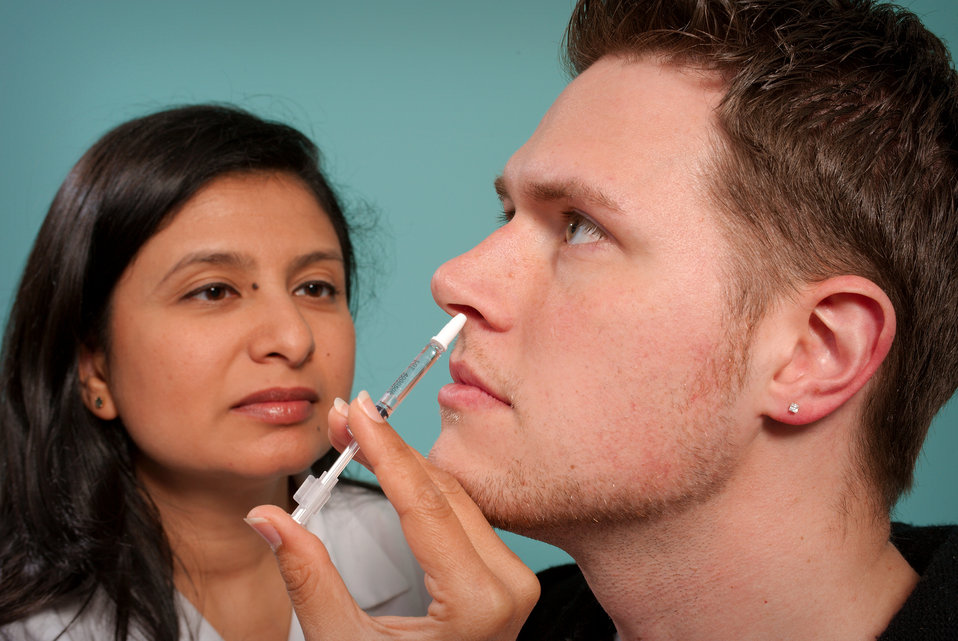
This 2009 image depicts a healthcare practitioner as she was administering the H1N1 live attenuated intranasal vaccine (LAIV) to a male recipient. Using a small syringe, she was delivering the vaccine mist into the man's left nostril.